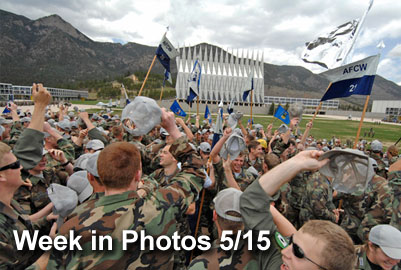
Week in Photos for May 15, 2009

Air Force Week in Photos for May 15, 2009 highlight photos from around the Air Force. In this photo by Dennis Rogers, Air Force Academy seniors celebrate the last day of classes before final exams on Spirit Hill at the U.S. Air Force Academy in Colorado.